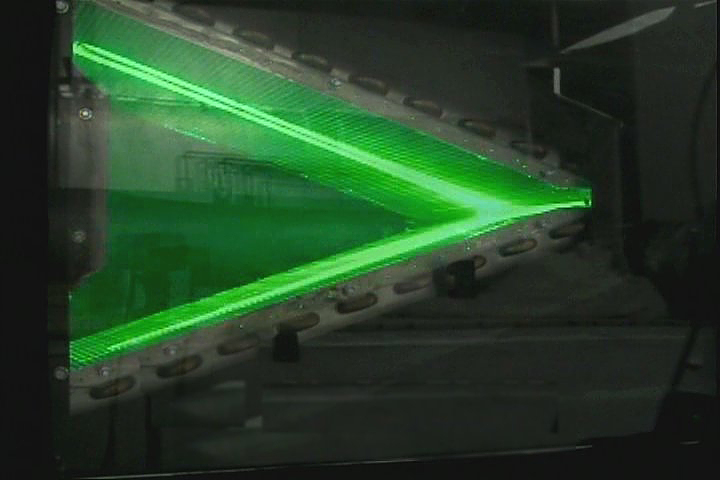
Heat Pumps; Air Velocity Measurement

A sheet of laser light illuminating the surface of the heat exchanger during the air velocity measurement experiment.